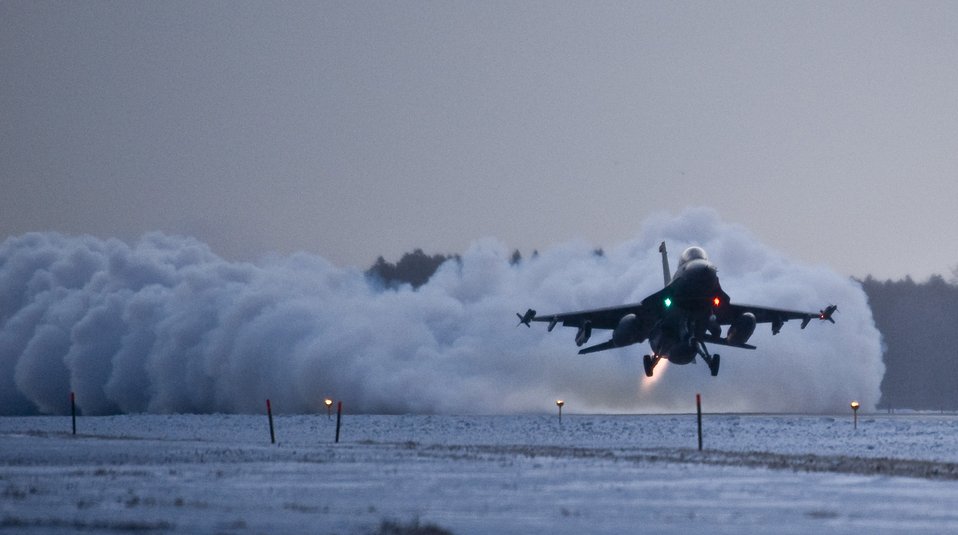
Misawa operations after dark

An F-16 Fighting Falcon takes off before dawn with Capt. Cory Farrer at the controls on the final day of an operational readiness exercise Feb. 3, 2010, at Misawa Air Base, Japan. The jet's afterburners kicked up a plume of steam and snow as Captain Farrer lifted the nose of the F-16. Captain Farrer is with the 13th Fighter Squadron.